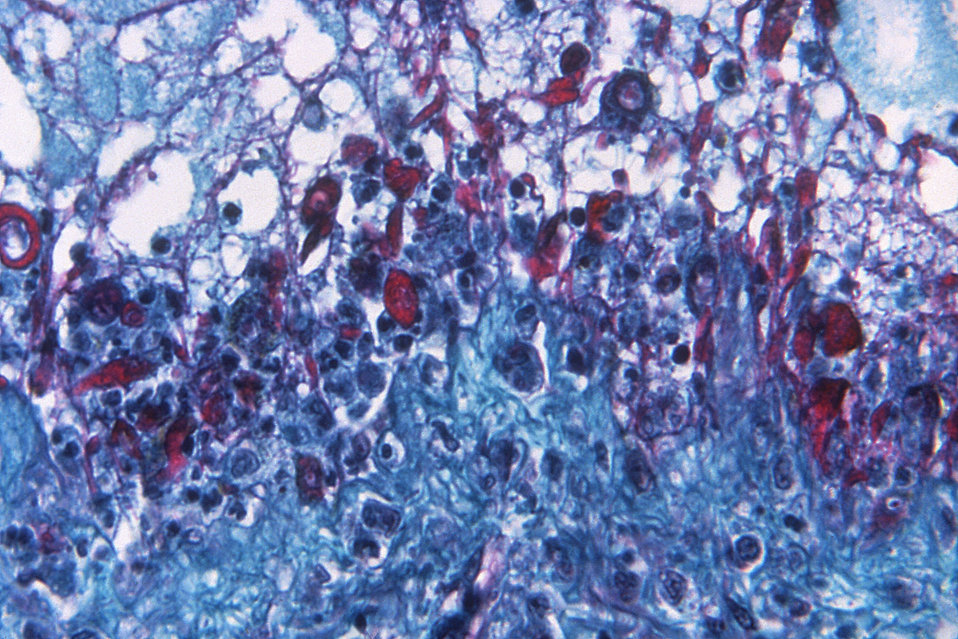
Under a magnification of 500X, this photomicrograph reveals some of the cytoarchitectural histopathologic changes which you'd find in a human skin tissue specimen that included a chickenpox, or varicella zoster virus lesion.